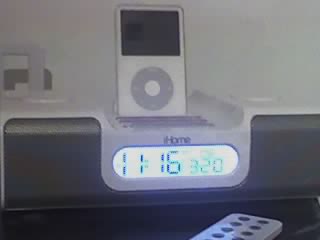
This is an iHome [iH5] with an ipod sitting in the dock.